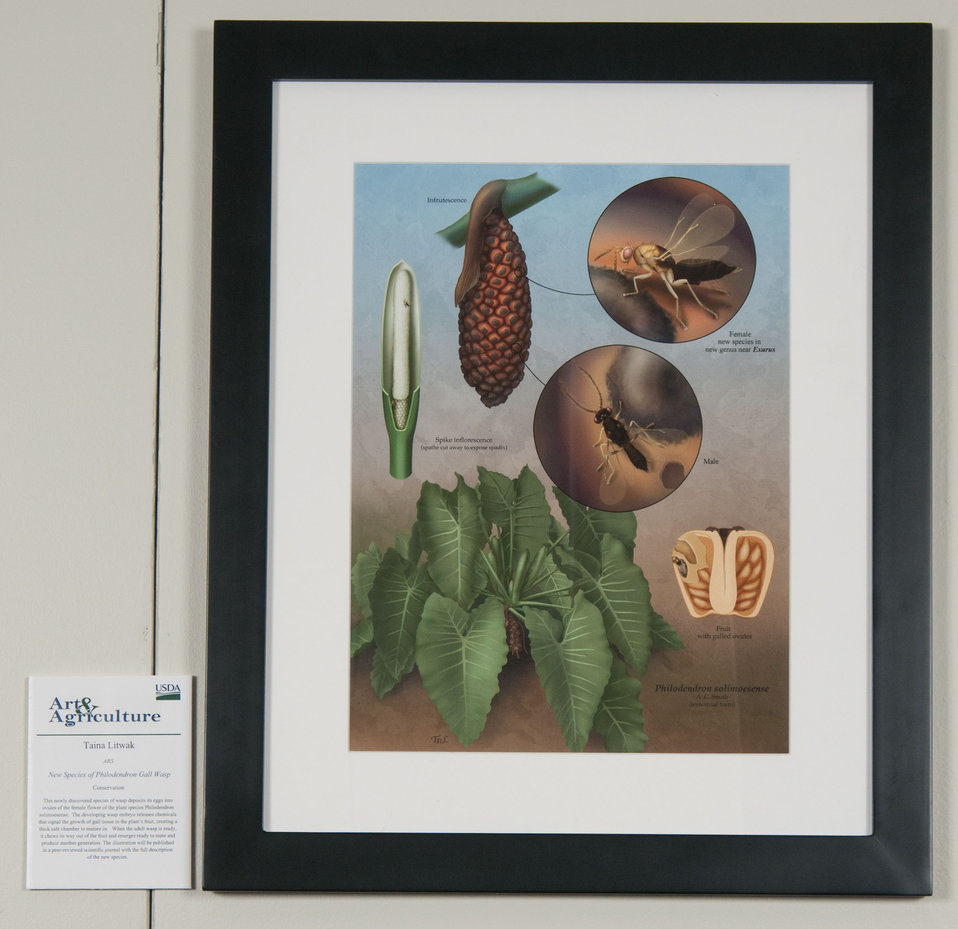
Online Viewer's Choice entries of the 2013 Art & Agriculture, Tuesday, July 9, 2013, in the South Building, Washington, D.C. Themes were expressed by employees from across the department and the contest was open to full-time and part-time USDA employees. Winning artwork will be displayed till the end of the year. U.S. Artistic expression is a creative outlet that is vital for an individual to grow and develop.